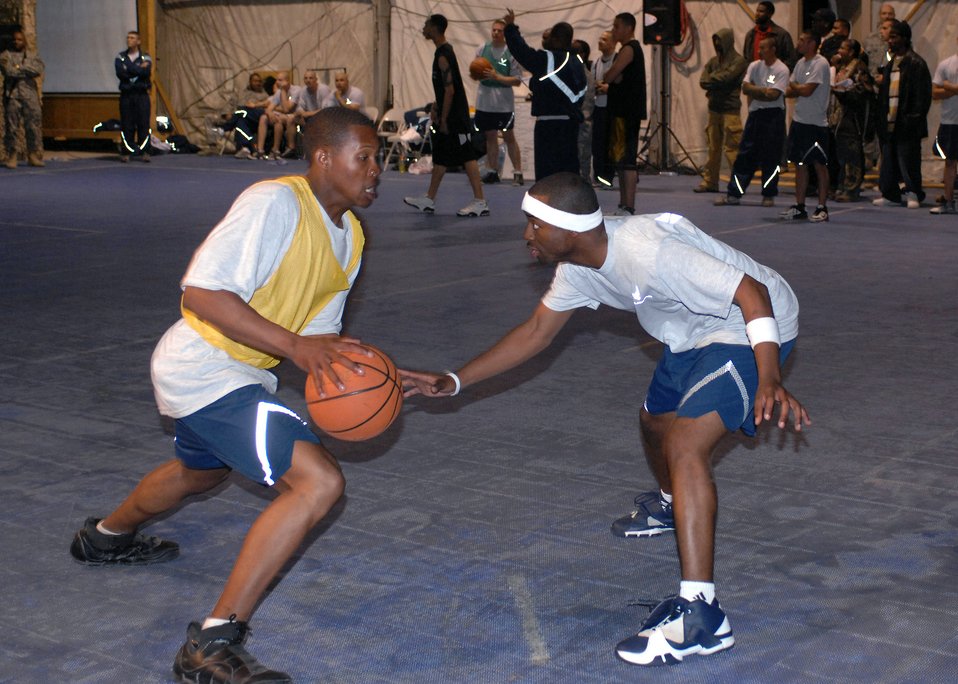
Servicemembers have March Madness Bagram style

Senior Airman Eric Wooten drives past Staff Sgt. Kevin Clark in the three-on-three March Madness Basketball Tournament held April 6 at Bagram Air Base, Afghanistan. Airman Wooten is a 455th Expeditionary Security Forces Squadron force protection escort deployed from Keesler Air Force Base, Miss., and Sergeant Clark is a 455th Expeditionary Mission Support Squadron services journeyman deployed from Eglin AFB, Fla.